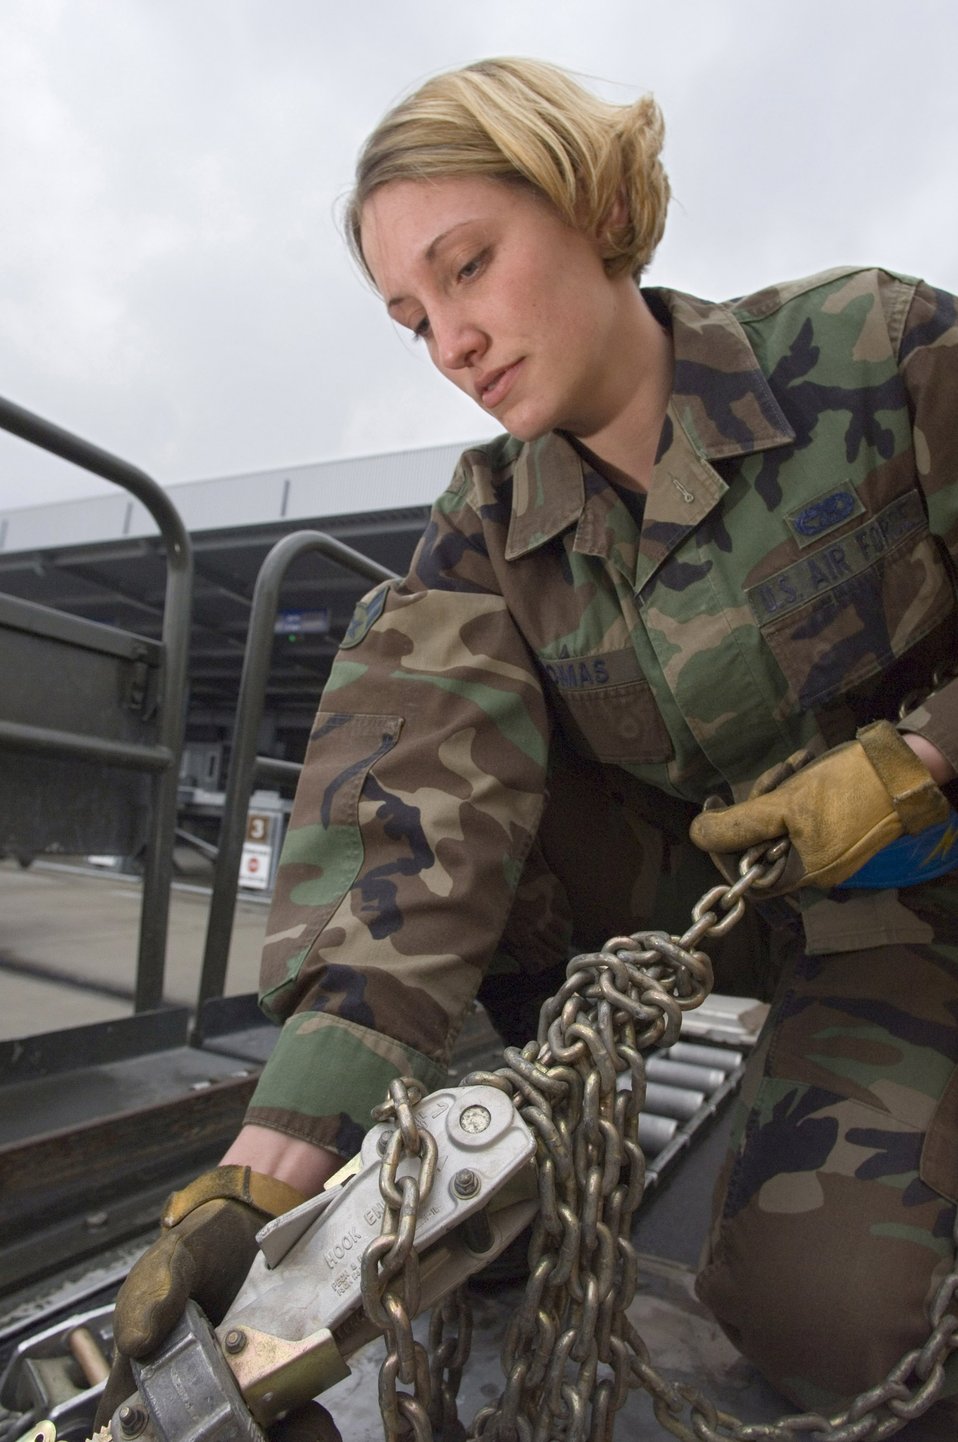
Pallet secured

Airman 1st Class Chasity Thomas ties down a pallet at the mechanized materiel handling system automated warehouse at Ramstein Air Base, Germany, on Wednesday, March 29, 2006. Airman Thomas is with the 723rd Air Mobility Squadron.